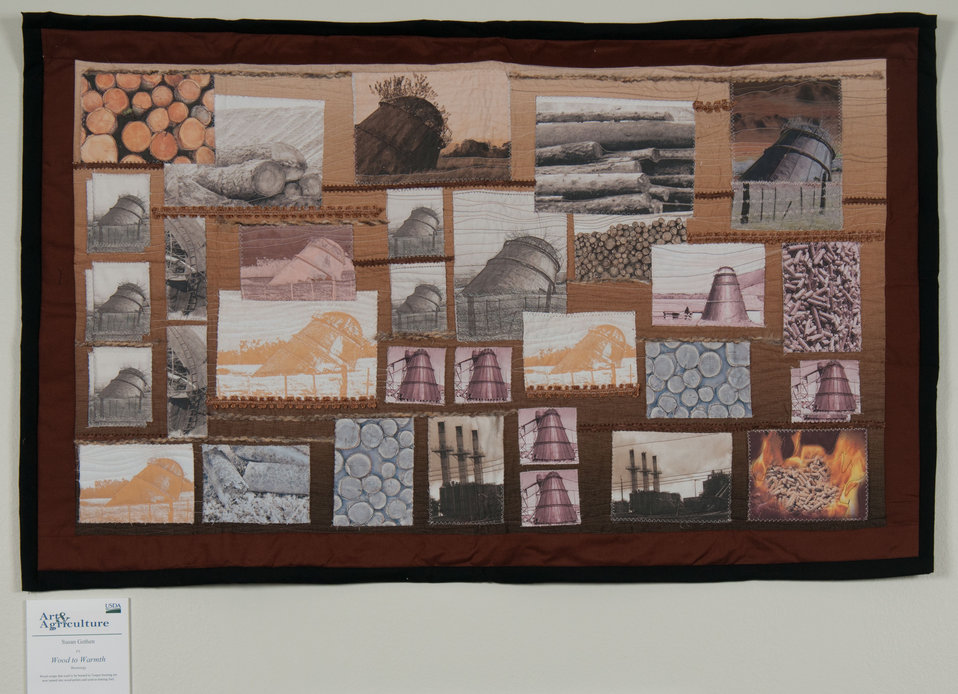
Online Viewer's Choice entries of the 2013 Art & Agriculture, Tuesday, July 9, 2013, in the South Building, Washington, D.C. Themes were expressed by employees from across the department and the contest was open to full-time and part-time USDA employees. Winning artwork will be displayed till the end of the year. U.S. Artistic expression is a creative outlet that is vital for an individual to grow and develop.